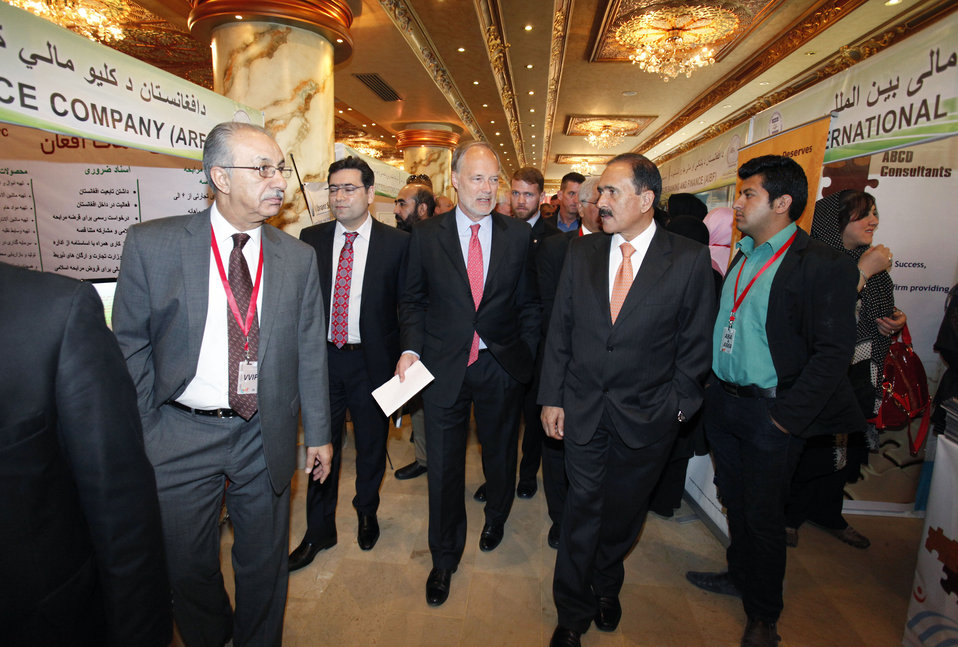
Access to Finance Exhibition in Kabul

U.S. Ambassador James B. Cunningham tours the Second Access to Finance Exhibition in Kabul on Tuesday, October 29, 2013. Thousands of business representatives from across Afghanistan attended the exhibition promoting branchless banking and electronic payments.